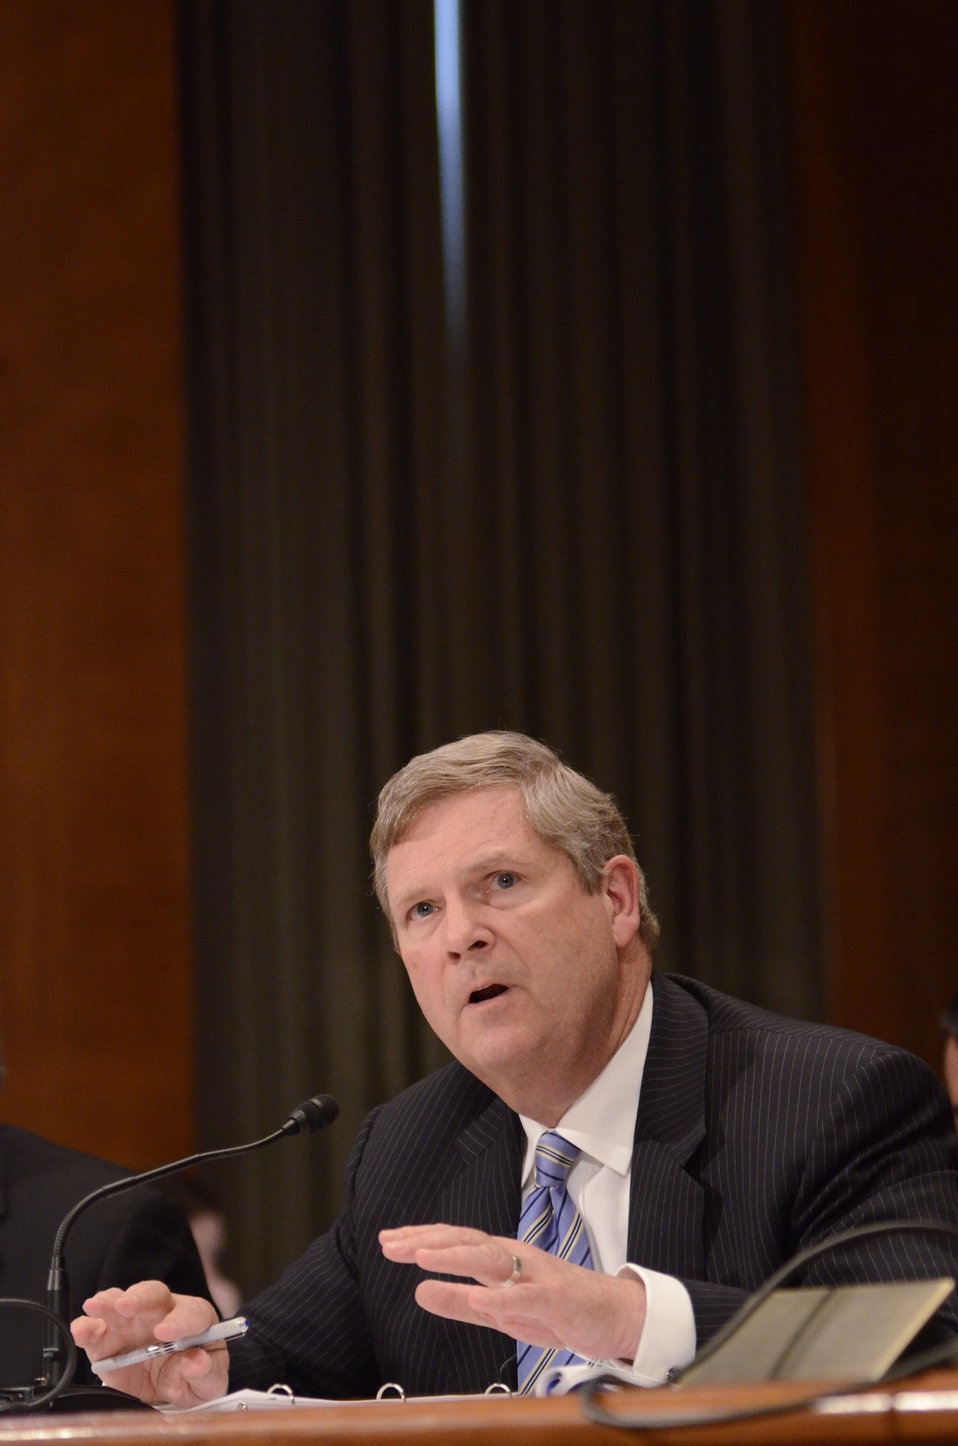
Agriculture Secretary Tom Vilsack testifies before the Senate Agriculture Appropriations Committee on the fiscal year 2013 budget at the Dirksen Senate Office Building in Washington, D.C., on Thursday, March 29, 2012.